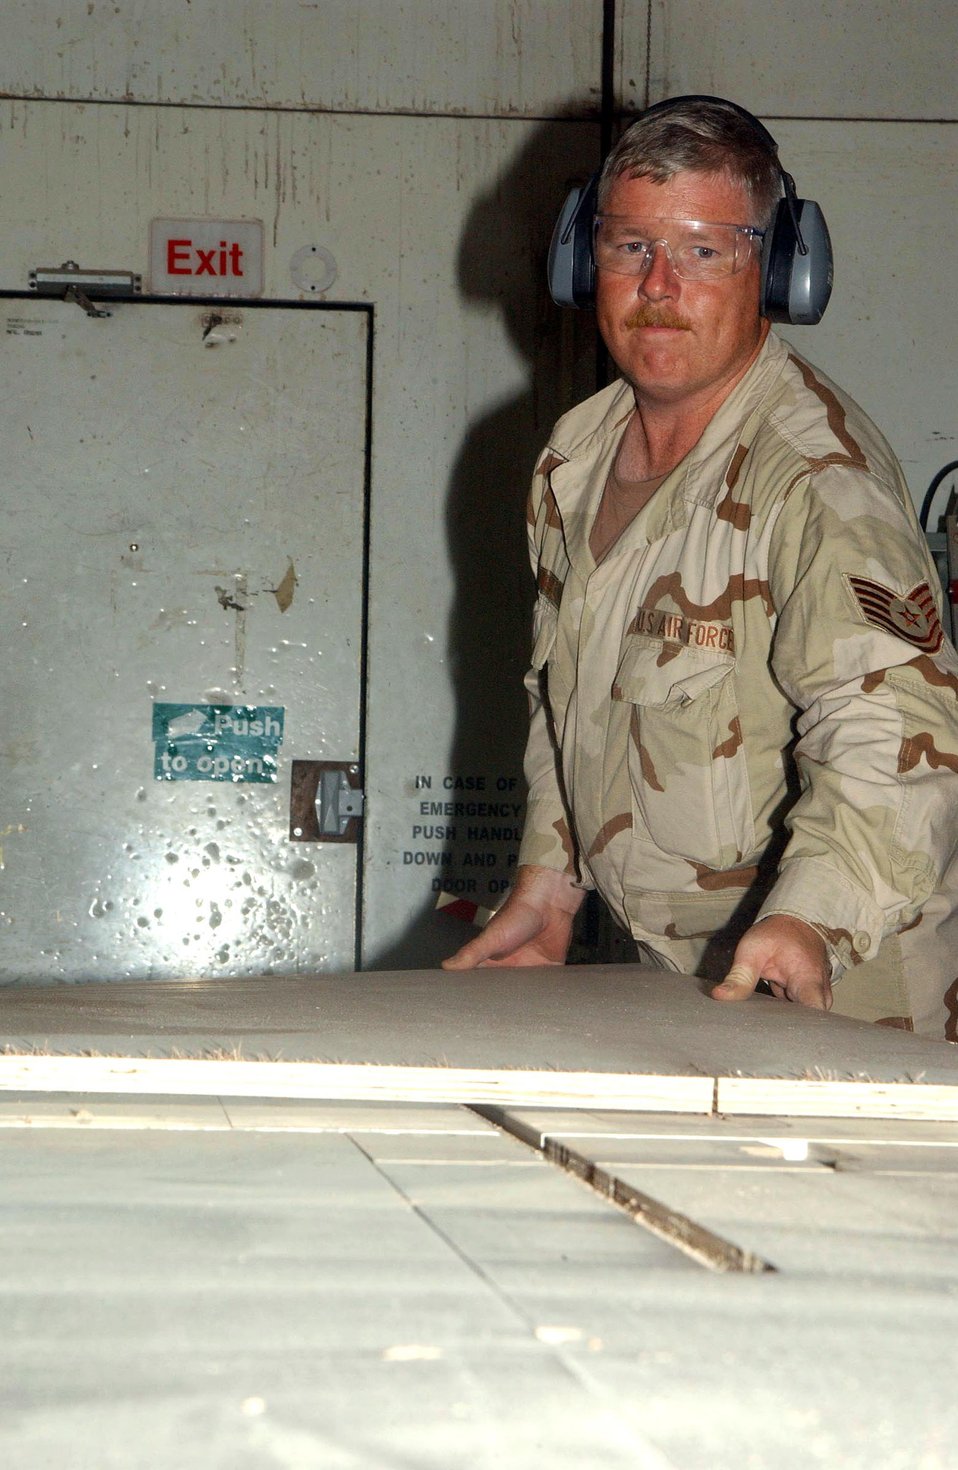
Engineers at work

SOUTHWEST ASIA (AFPN) -- Tech. Sgt. Jonathan D. Gambill uses a table saw to cut a new door for one of the residential lodging tents here. Sergeant Gambill is one of several structural maintenance technicians assigned to take care of a variety of buildings, tents and hangars here. He is deployed to the 380th Expeditionary Civil Engineer Squadron from Luke Air Force Base, Ariz.